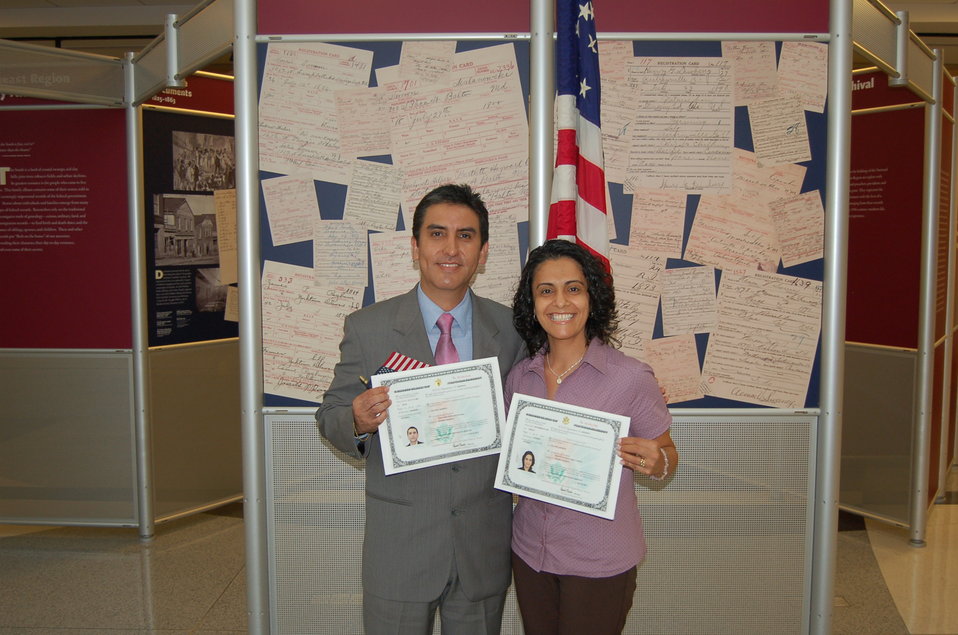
New Citizens